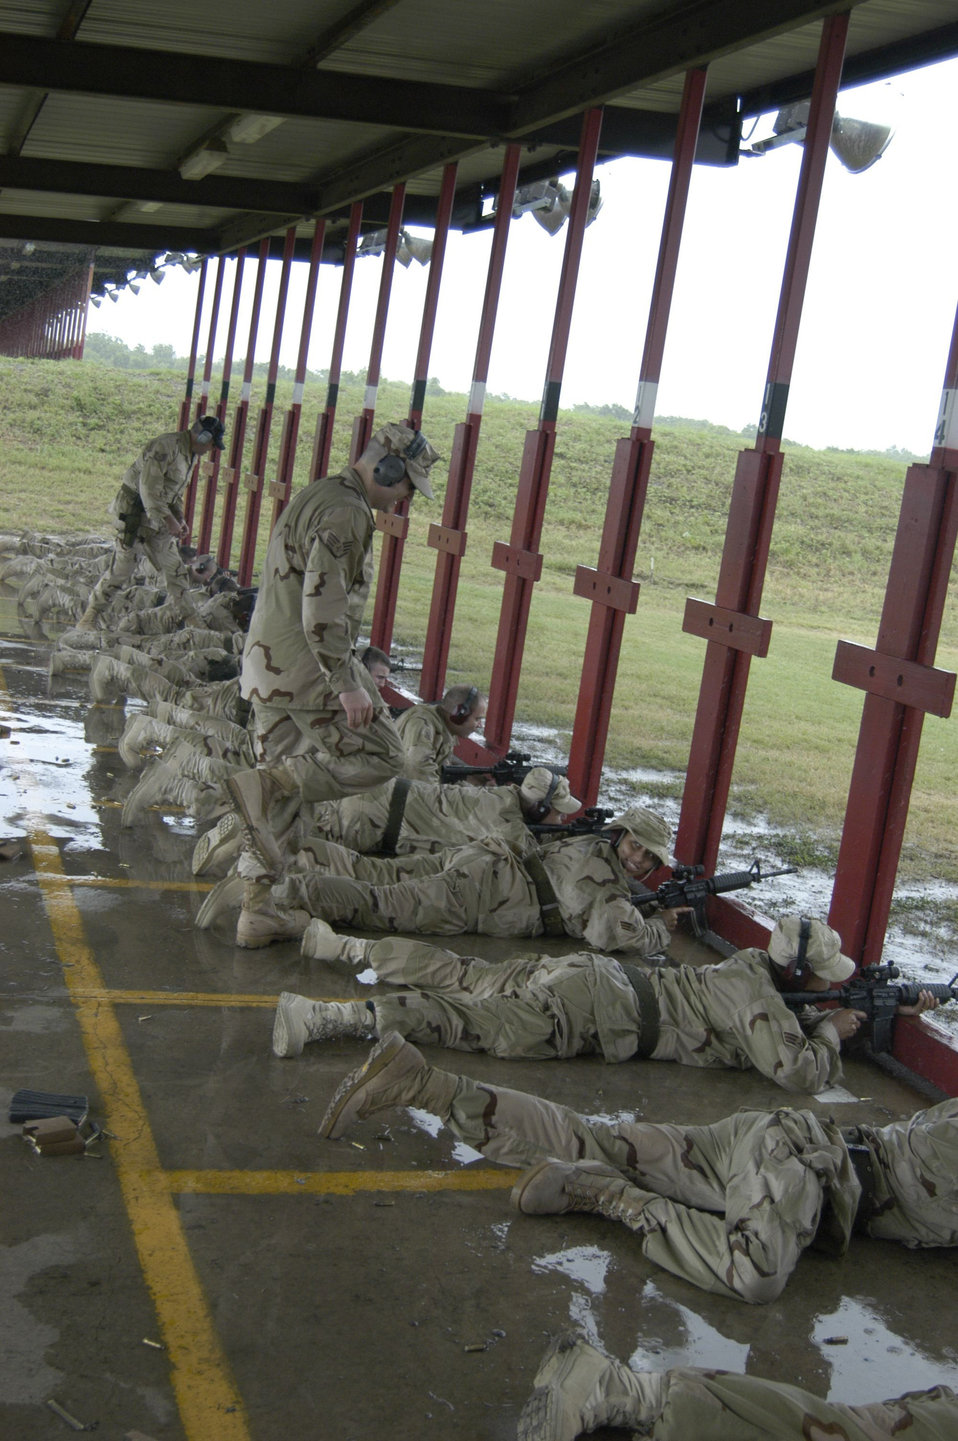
Convoy course prepares Airmen for duty in Iraq

LACKLAND AIR FORCE BASE, Texas -- Staff Sgt. Scott Grant (foreground) and Tech. Sgt. Richard Conrad observe as students begin firing their M-4 carbines during a Basic Combat Convoy Course here. The 342nd Training Squadron instructors will be working seven days a week, 18 hours a day for 13 weeks as several hundred students go through the course.